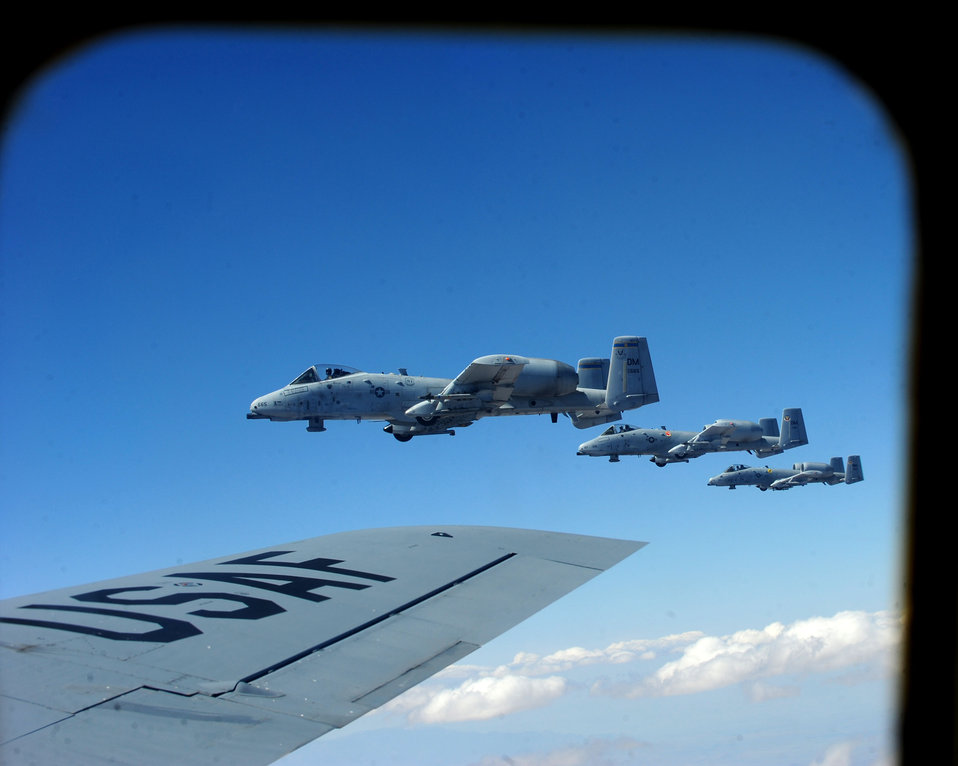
A-10C airborne refueling

Three A-10C Thunderbolt IIs fly in formation beside a KC-135 Stratotanker April 27, 2010, during an aerial refueling mission over Southern Arizona. The pilots, from the 358th Fighter Squadron at Davis-Monthan Air Force Base, Ariz., completed their first aerial refueling mission as part of their training to become fully qualified A-10C attack pilots.